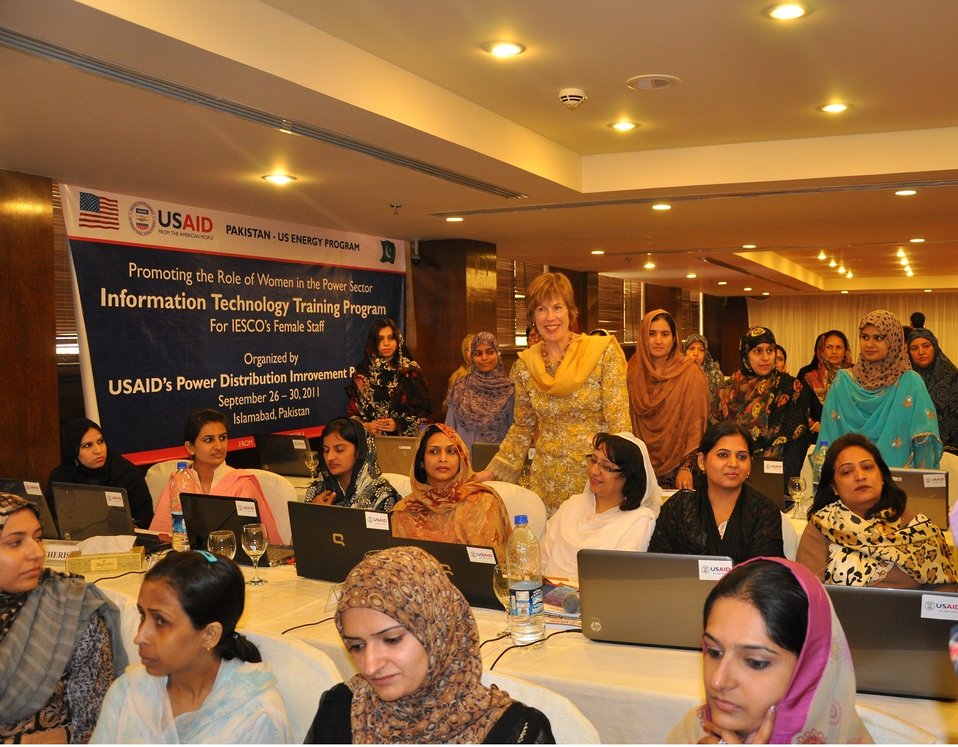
26 Spet, 2011 - US Ambassadar Cameron Munter's wife Dr. Marilyn Wyatt interacting with IESCO Female IT Staff2

The US Ambassador Cameron Munter's wife Dr.Marilyn Wyatt, chief guest of the workshop for training female IESCO staff in the IT discipline, interacting with the participants of the workshop. Dr. Marilyn Wyatt, also inaugurated the Power Distribution Program's website (www.pdip.pk) that was launched at the same event.